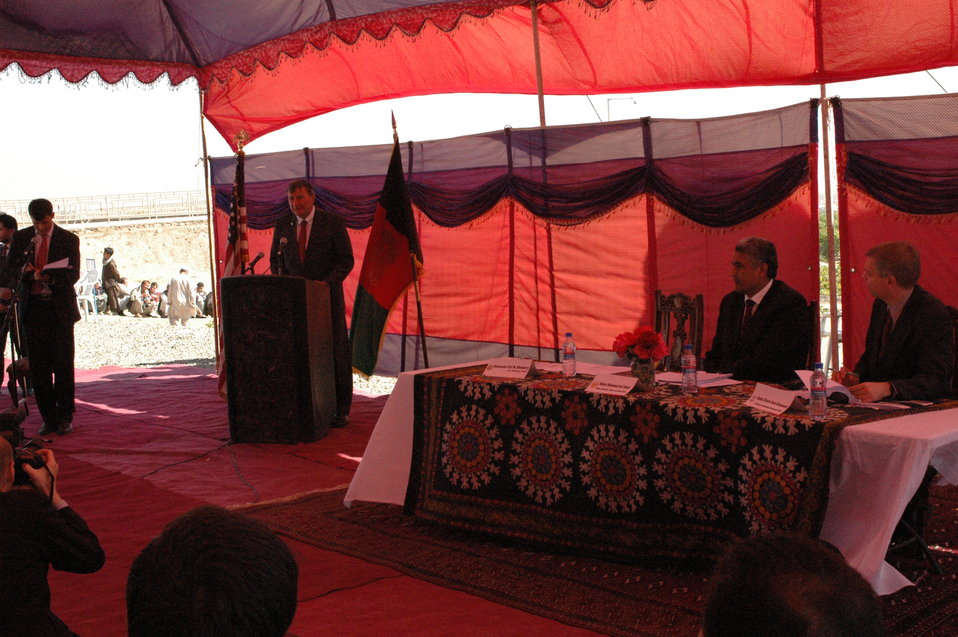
AVIPA Plus Wheat Seed Distribution 101005

US Ambassador Karl Eikenberry and USAID Acting Mission Director Kevin Brownawell joined the Minister of Agriculture, Irrigation and Livestock, H.E. Minister Mohammed Rahimi in signing a Memorandum of Understanding and distributing vouchers to area farmers for wheat and fertilizer.

US Ambassador Karl Eikenberry and USAID Acting Mission Director Kevin Brownawell joined the Minister of Agriculture, Irrigation and Livestock, H.E. Minister Mohammed Rahimi in signing a Memorandum of Understanding and distributing vouchers to area farmers for wheat and fertilizer.